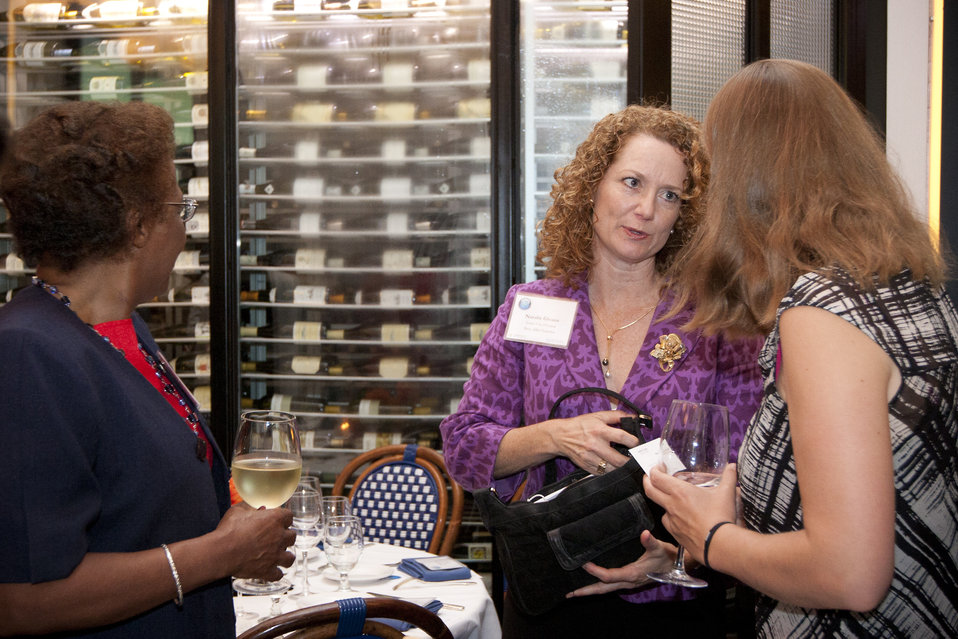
WomenandEnergy 21